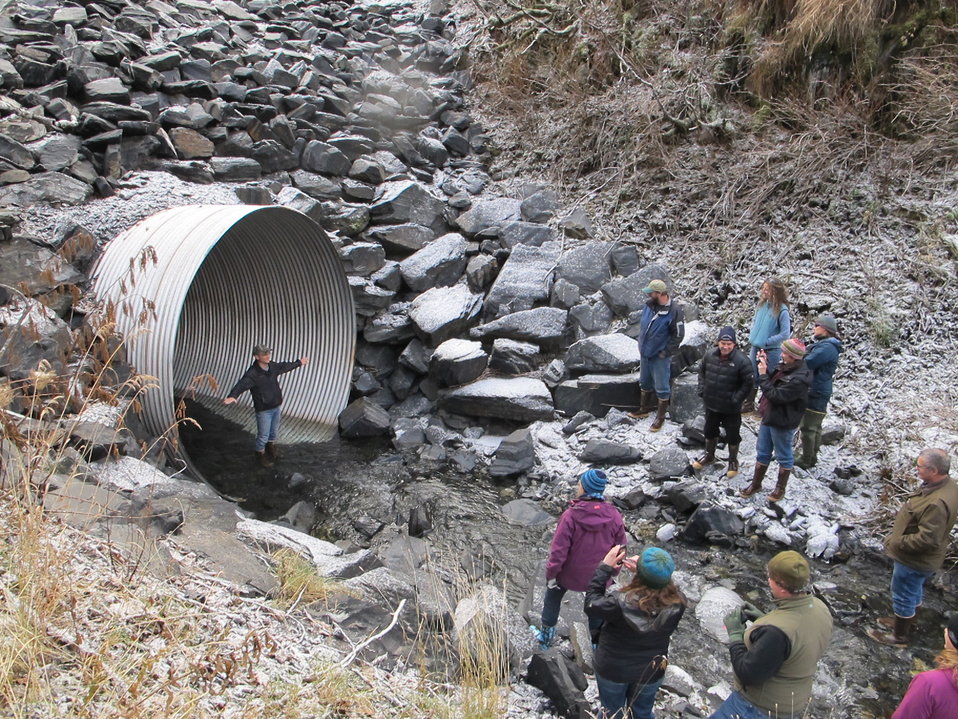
Kodiak Fish Passage Workshop

Service Fish Passage Engineer stands in a culvert on Kodiak Island during a fish passage workshop. USFWS/Katrina Mueller